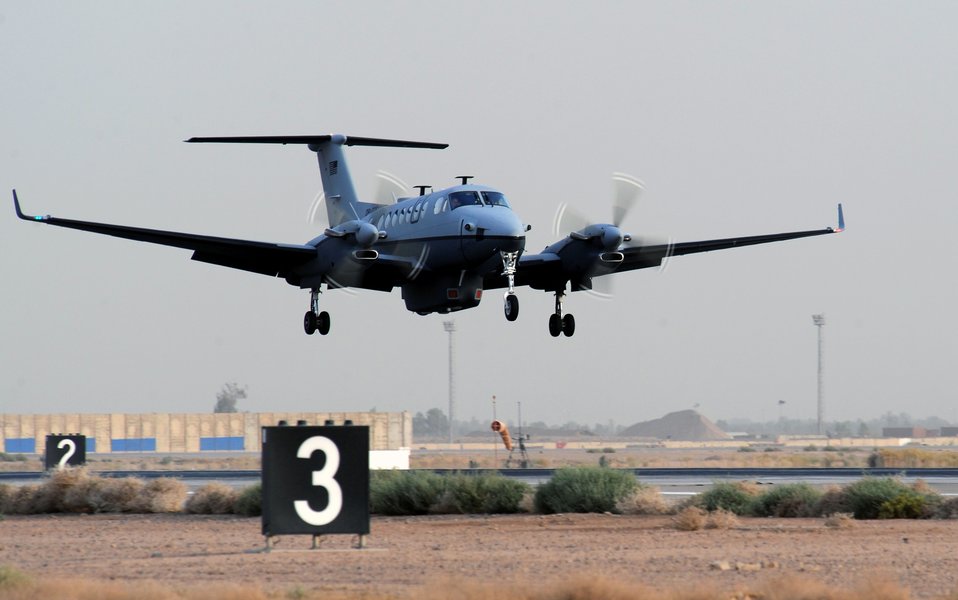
MC-12 flies first combat mission

The first MC-12 aircraft in-theater lands after its first combat sortie at approximately 6:20 p.m. local time June 10 at Joint Base Balad, Iraq. The Air Force's newest intelligence, surveillance and reconnaissance platform, the MC-12 is a medium-altitude manned special-mission turbo prop aircraft that supports coalition and joint ground forces.